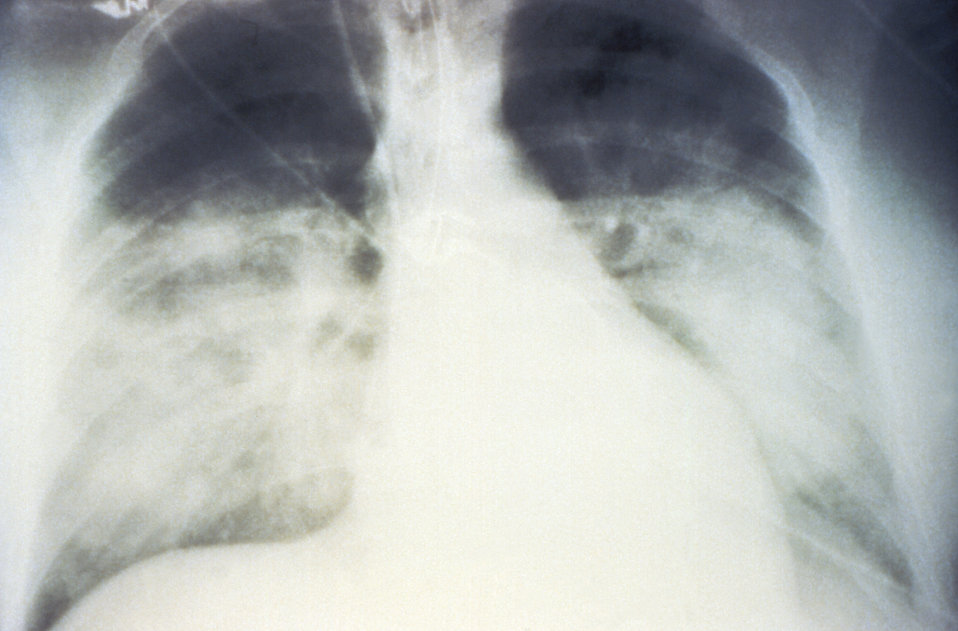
This AP chest x-ray reveals the mid-staged bilateral pulmonary effusion due to Hantavirus pulmonary syndrome, or HPS.